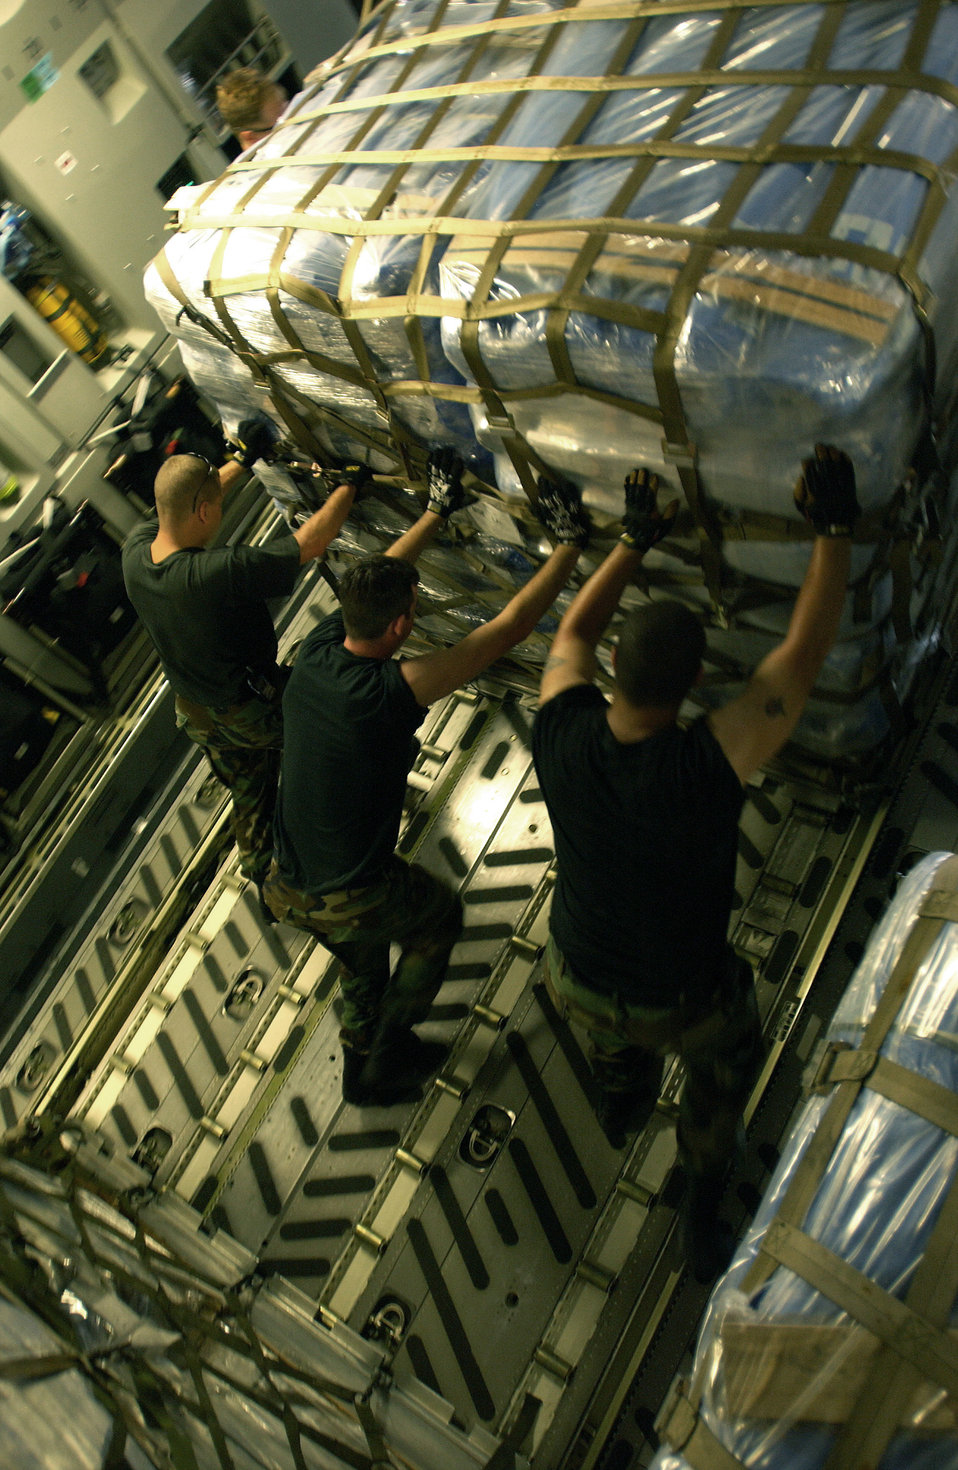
Hurricane Charley relief

LAKELAND, Fla. -- Airmen of the Tanker Airlift Control Element from McGuire Air Force Base, N.J., unload relief pallets that arrived here Aug. 15. Lakeland Regional Airfield has become the center of relief operations in Florida for the Federal Emergency Management Agency. The U.S. Air Force is providing support by airlifting equipment, people and supplies, expediting the delivery of the items.